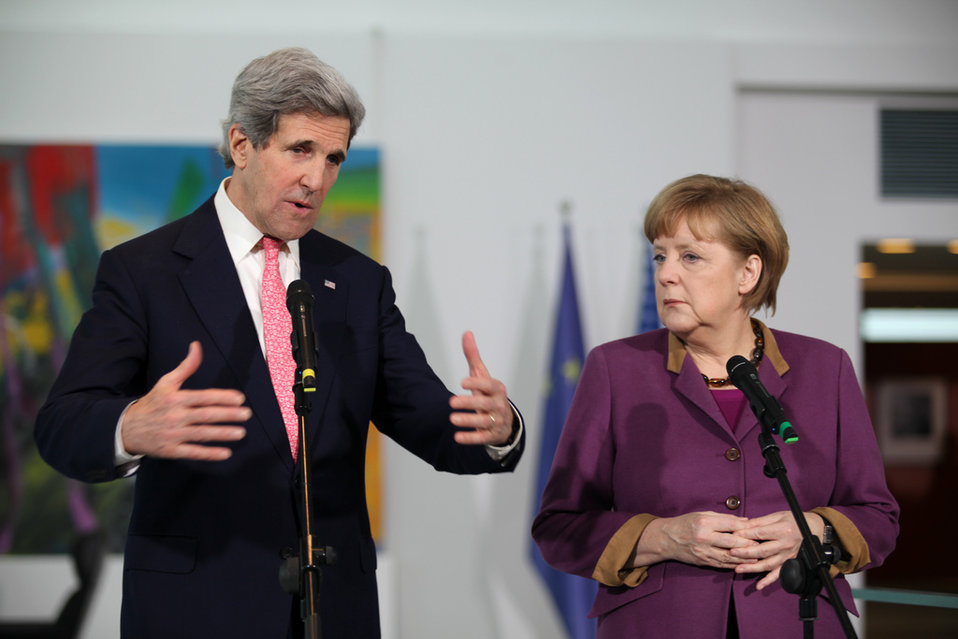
Secretary Kerry and German Chancellor Merkel Address Reporters

U.S. Secretary of State John Kerry and Angela address reporters after their bilateral meeting at the German Chancellery in Berlin, Germany, February 26, 2013.